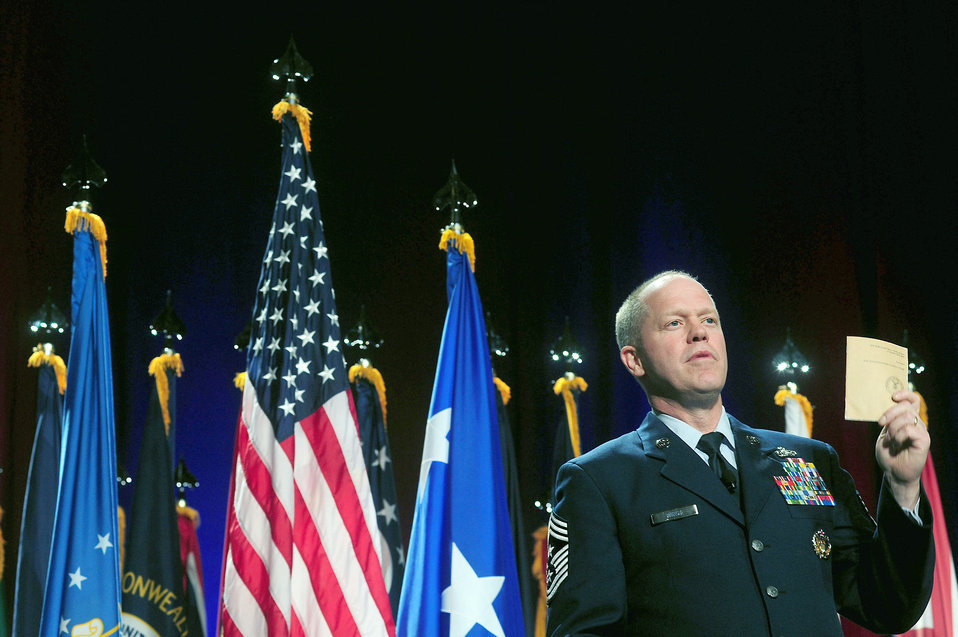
ANG Command Chief Master Sgt. Christopher Muncy

Air National Guard Command Chief Master Sgt. Christopher Muncy holds up a copy of the Air Force's